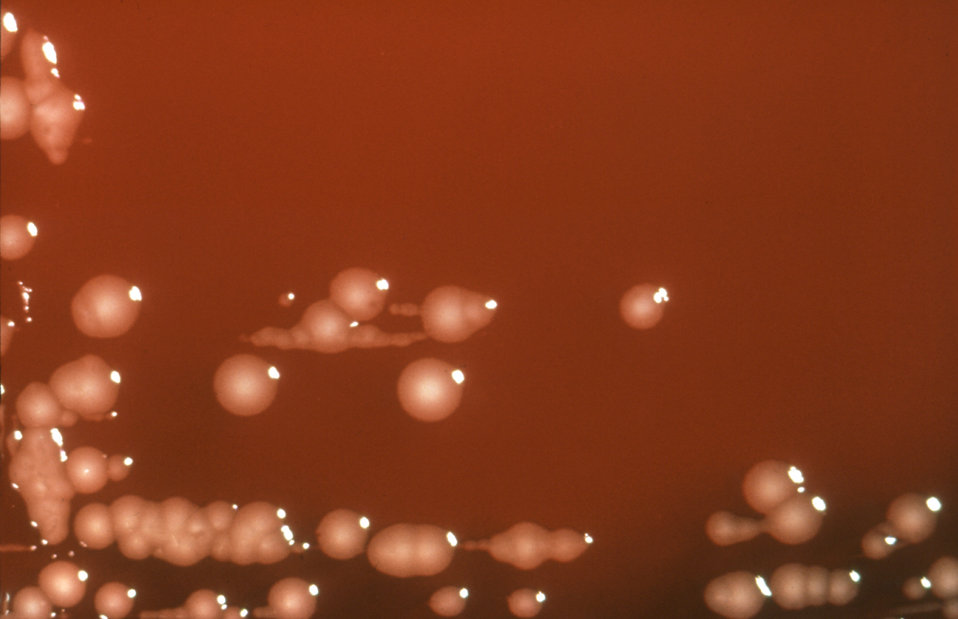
These are colonies of Escherichia coli bacteria growing on blood agar culture medium.